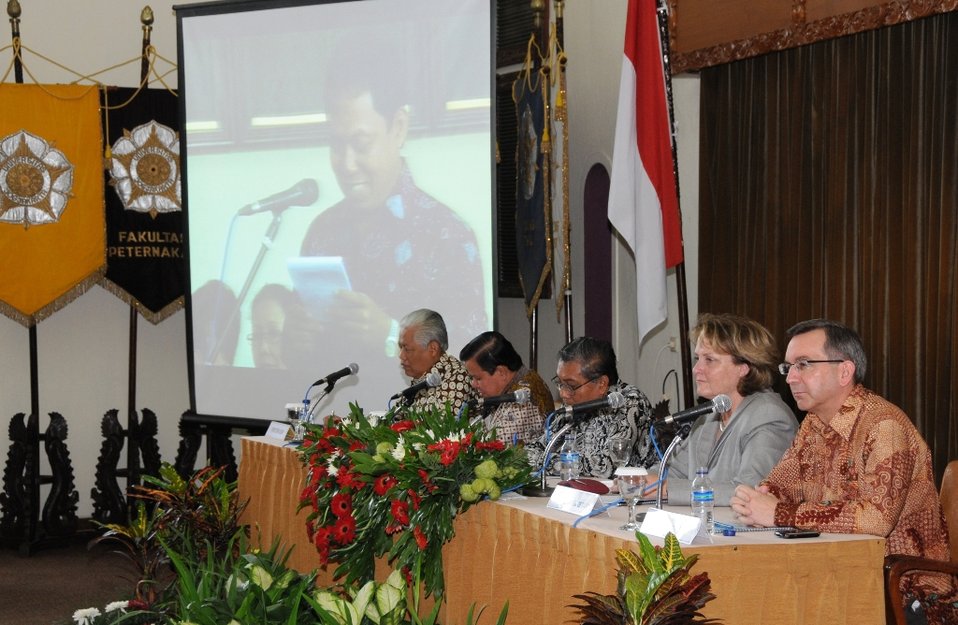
Under Secretary McHale Speaks in a Panel Discussion

U.S. Under Secretary for Public Diplomacy and Public Affairs Judith A. McHale, second from right, speaks in a panel discussion on entrepreneurship education with students and faculty at the Gadjah Mada University (UGM) in Yogyakarta, Indonesia, on December 4, 2010. Also featured in the photo are U.S. Ambassador to Indonesia Scot Marciel, right, Deputy Minister of National Education Professor Dr. Fasli Jalal, second from left, and Gajah Mada University’s Rector, Professor Ir. Sudjarwadi, MEng, Phd., left.